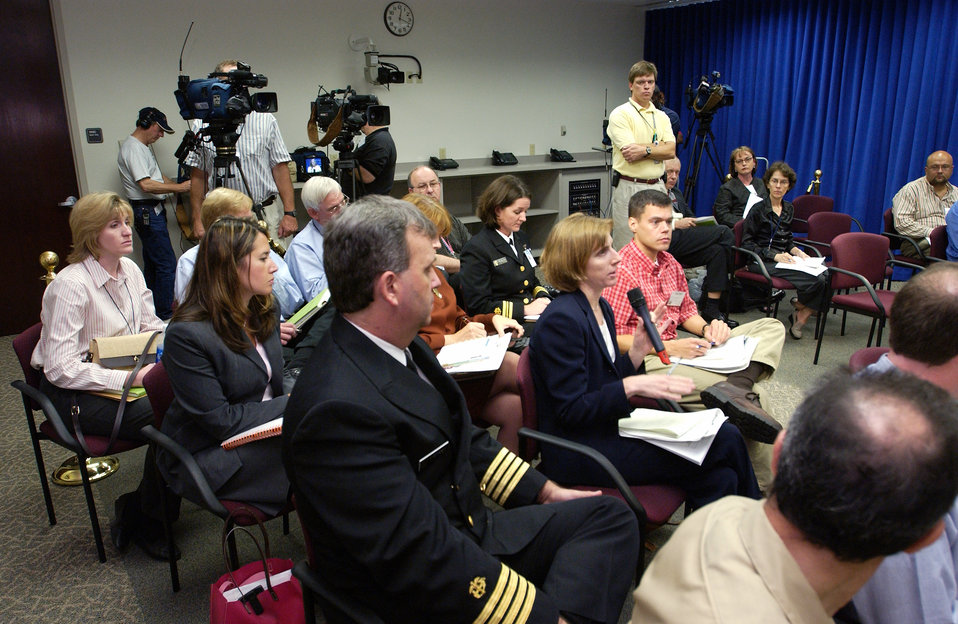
Here Wall Street Journal reporter Betsy McKay asks a question of former CDC Director (2002 - 2008), Julie Gerberding, MD, MPH, during a news conference.